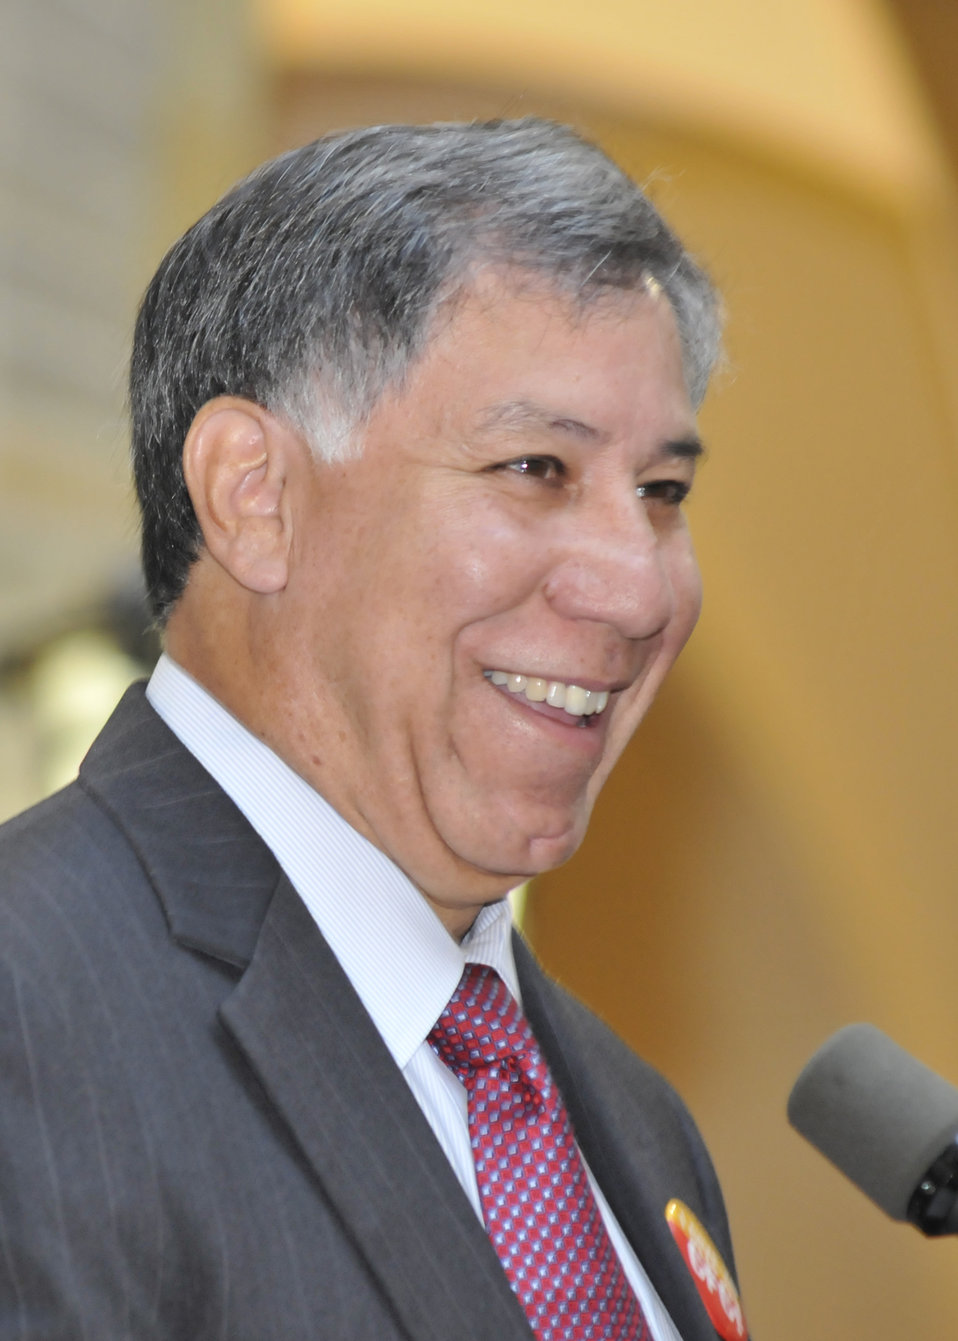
Agriculture Under Secretary Marketing and Regulatory Programs Ed Avalos makes remarks at the opening ceremonies for the 2010 Combined Federal Campaign held on the Patio of the U. S. Department of Agriculture in Washington, DC, on Tuesday, October 12, 2010. USDA Photo 10di1521-0031 by Bob Nichols.